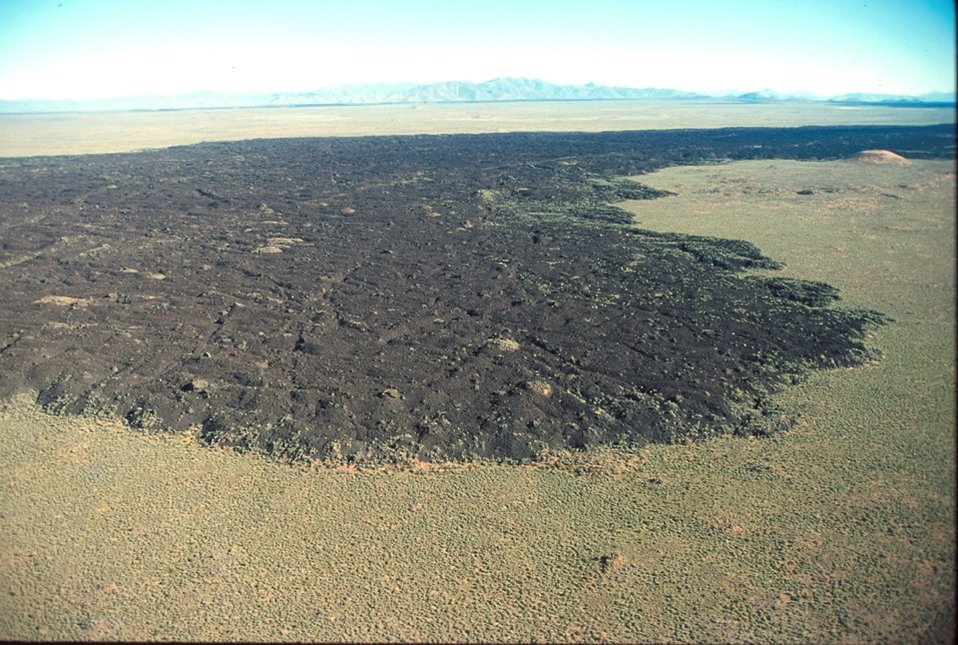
Craters of the Moon National Monument Shoshone Field Office USRD Upper Snake River District